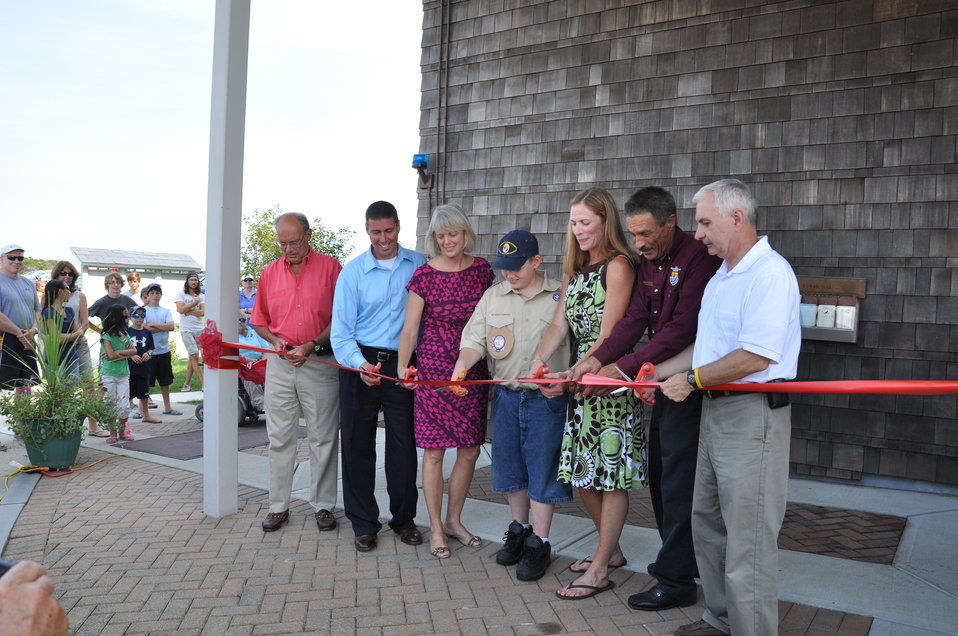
Ribbon Cutting

Sen. Jack Reed of Rhode Island, Refuge Manager Charlie Vandemoer, U.S. Fish and Wildlife Service Northeast Regional Director Wendi Weber, Boy Scout and refuge volunteer Edward Gentry, RI Department of Environmental Management Director Janet Coit, Middletown Council member Edward Silveira, andFriends of Rhode Island National Wildlife Refuges Chairman Richard Thieke cut the ribbon to re-open the visitor center at Sachuest Point National Wildlife Refuge.